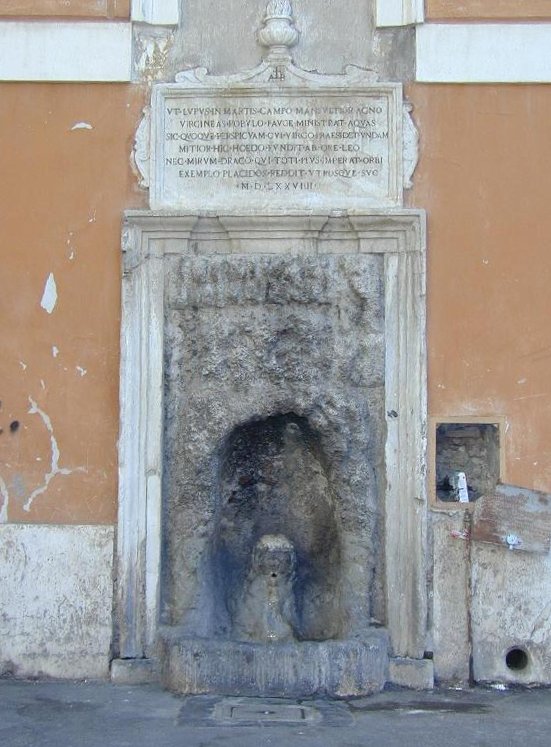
Italiano: Fontana del Leone a San Salvatore in Lauro Roma, Italia